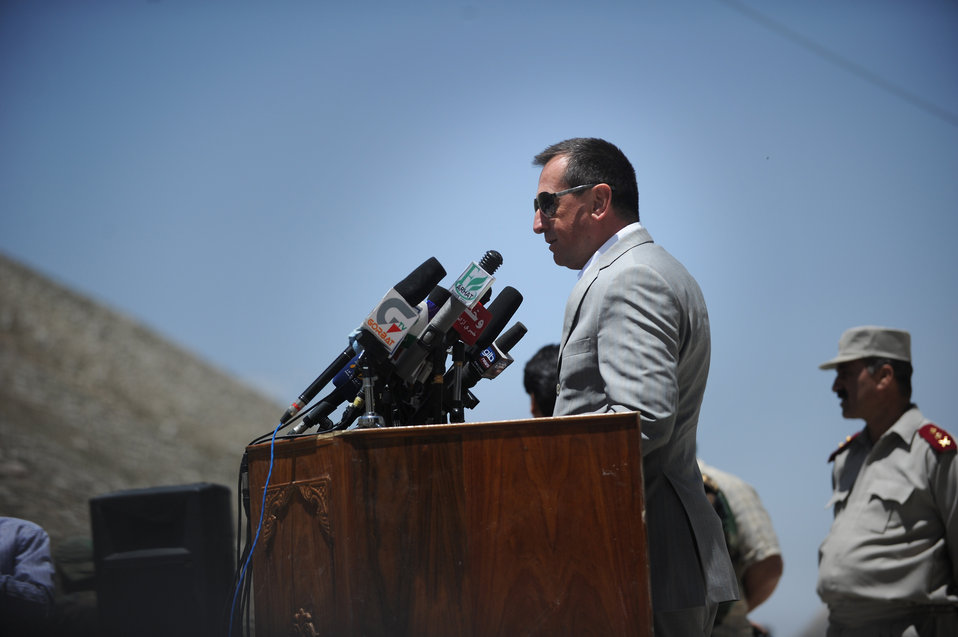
Russian Ambassador Andrey Avetisyan makes remarks during a ceremony to mark the beginning of renovations at the Salang Tunnel on the border of Parwan and Baghlan Provinces, Afghanistan, on Wednesday, June 15, 2011. (S.K.Vemmer/Department of State)